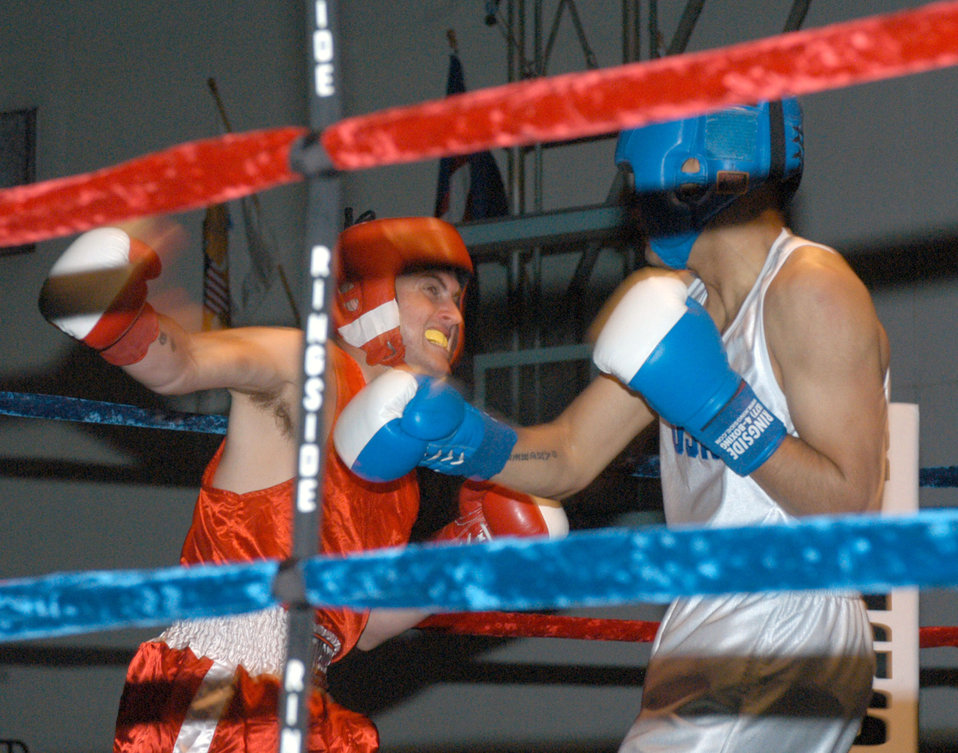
Airmen, Soldiers compete during boxing tourney

Gregory Shoopman (left), representing U.S. Army Garrison Humphreys, takes on Sergio Sanchez from Kunsan Air Base during the 2007 summer Smoker Boxing Tournament on Aug. 11 at USAG Humphreys. Sanchez defeated Shoopman in the three-round bout.